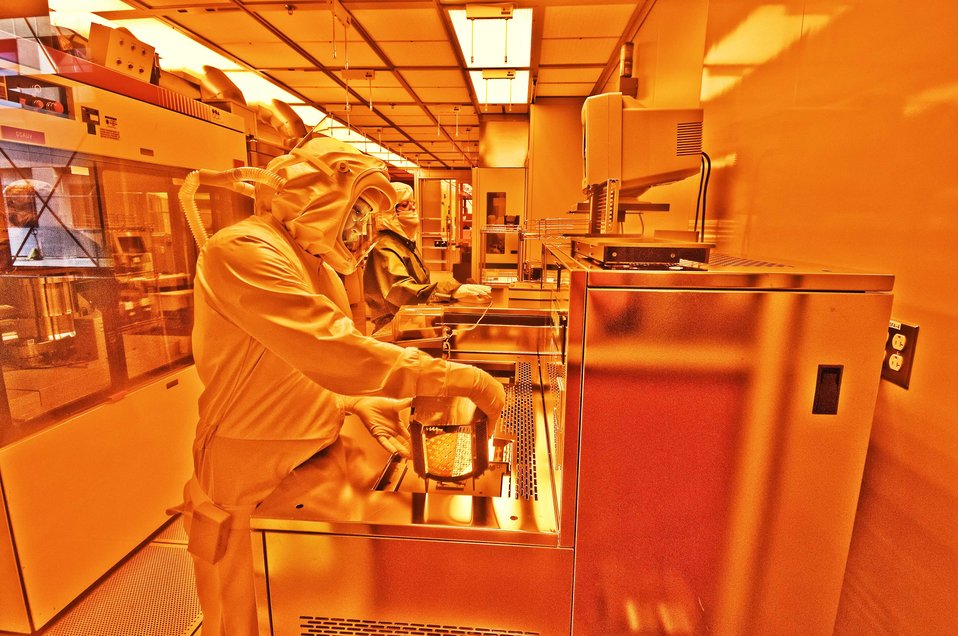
Workers at the Microsystems and Engineering Sciences Applications (MESA). The complex's initial mission is to produce electronic circuits and computer chips designed to withstand high levels of radiation.
These hardened electronics are critical to national security needs. Beyond its security its security role, MESA's combination of high-performance computing simulations, scientific research, and production capabilities in electronics and optics at the micro and nano levels makes it a world leader in a new type of simulation-led engineering that improves the quality of consumer goods.